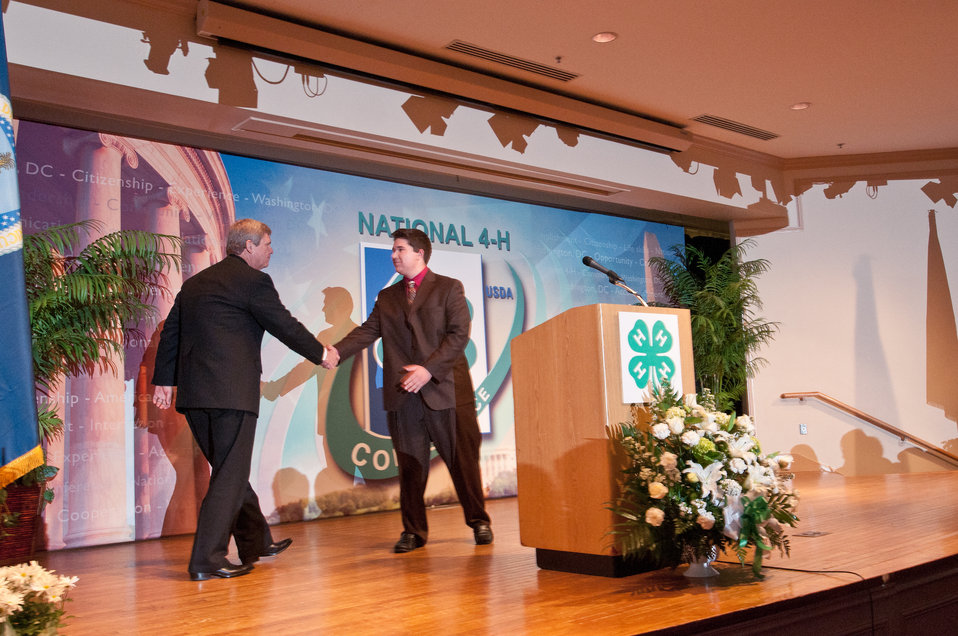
4-H Youth Development Program President Jared Padgett (right) introduced and welcomed to the stage, U.S. Department of Agriculture (USDA) Secretary Tom Vilsack spoke to approximately 300 youths from 47 states or territories and Canada at the National 4-H Conference on Tuesday, April 5, 2011, in Washington, DC. The conference is the premier youth development opportunity of the USDA. Aged between 15-19 years old the attendees were selected by various means by their states to represent them at the conference.